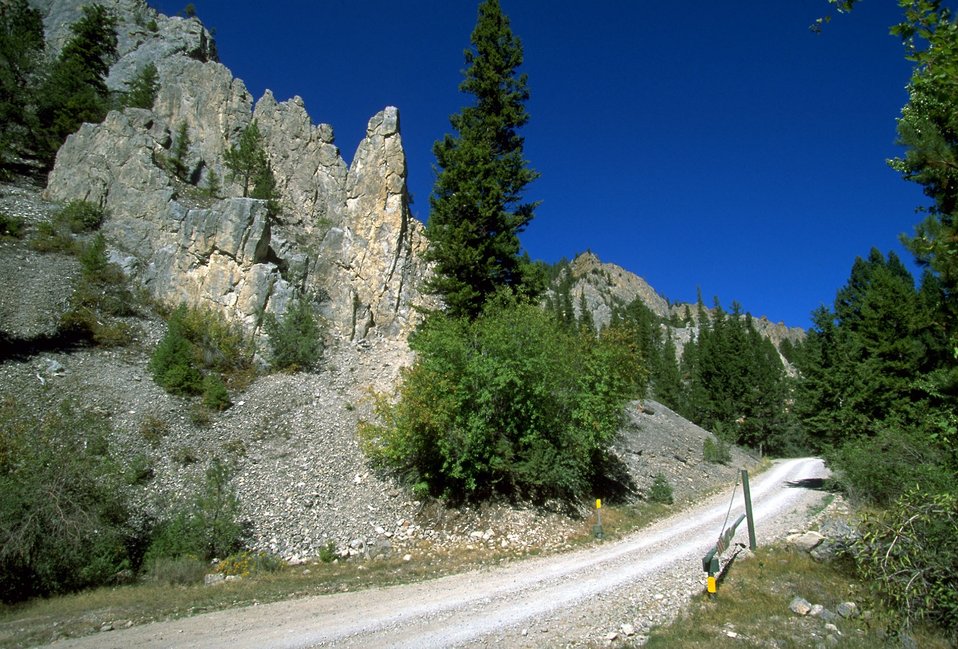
Rattler Gulch-Limestone Cliffs ACEC